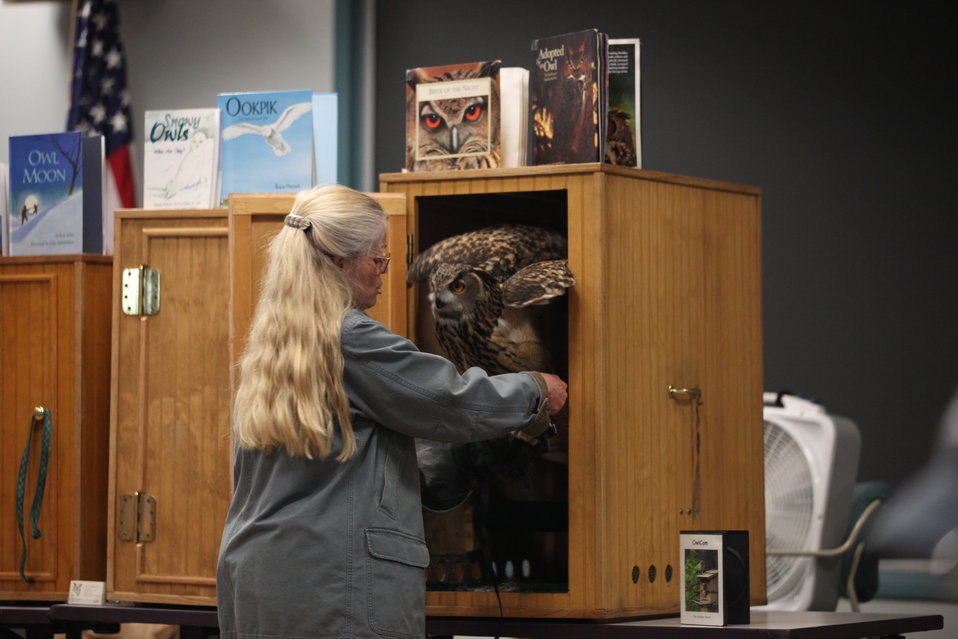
Great Horned Owl coming out of the box.